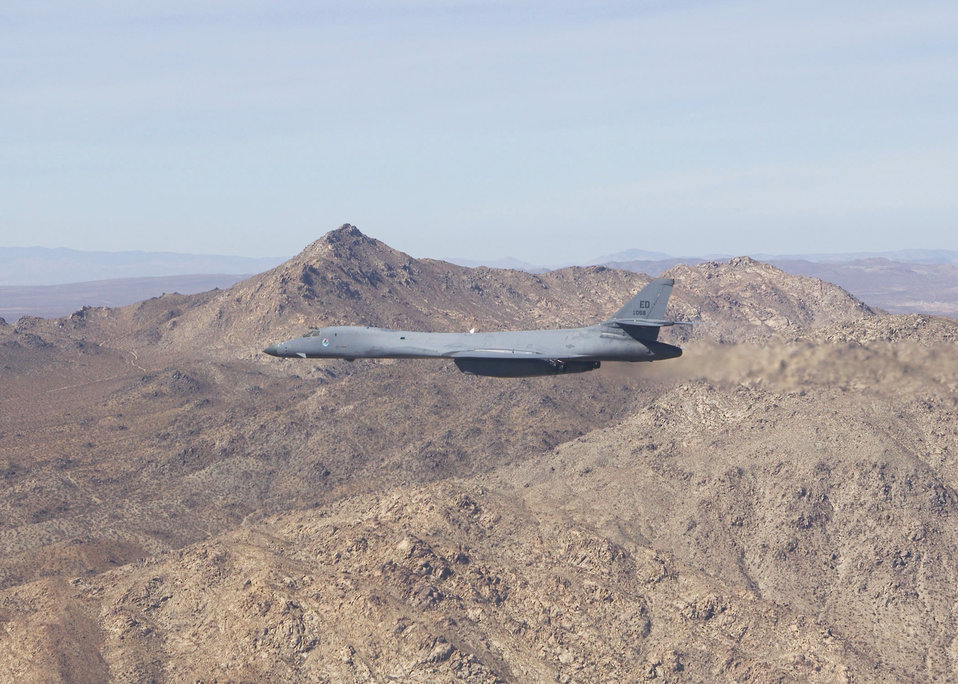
Breaking records

EDWARDS AIR FORCE BASE, Calif. -- A B-1B Lancer here flies overhead during the Edwards Air Force Base Open House and Air Show. The B-1B unofficially set and broke almost 50 new world speed records during the air show Oct. 25 and 26. Record-breaking courses included three 15-, 25-, 100-, 500- and 1,000-kilometer speed dashes. National Aeronautic Association officials still need to verify the results, before they become official. The NAA is the national authority in overseeing and certifying aviation records.